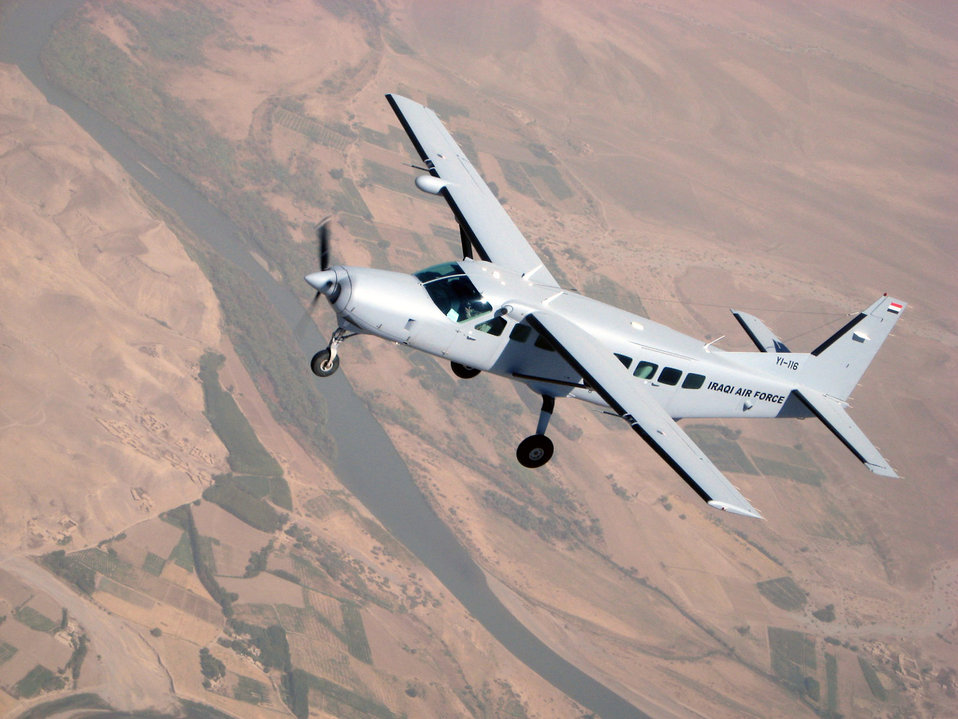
Iraqi training wing soars to 3,000th hour

A Cessna 208 Caravan assigned to the Iraqi air force Flying Training Wing at Kirkuk Regional Air Base, Iraq, flies over northern Iraq during a recent training mission. Iraqi air force 2nd Lt. Hassan flew a similar aircraft Sept. 23 during which he eclipsed the FTW's 3,000 flying training-hour mark.